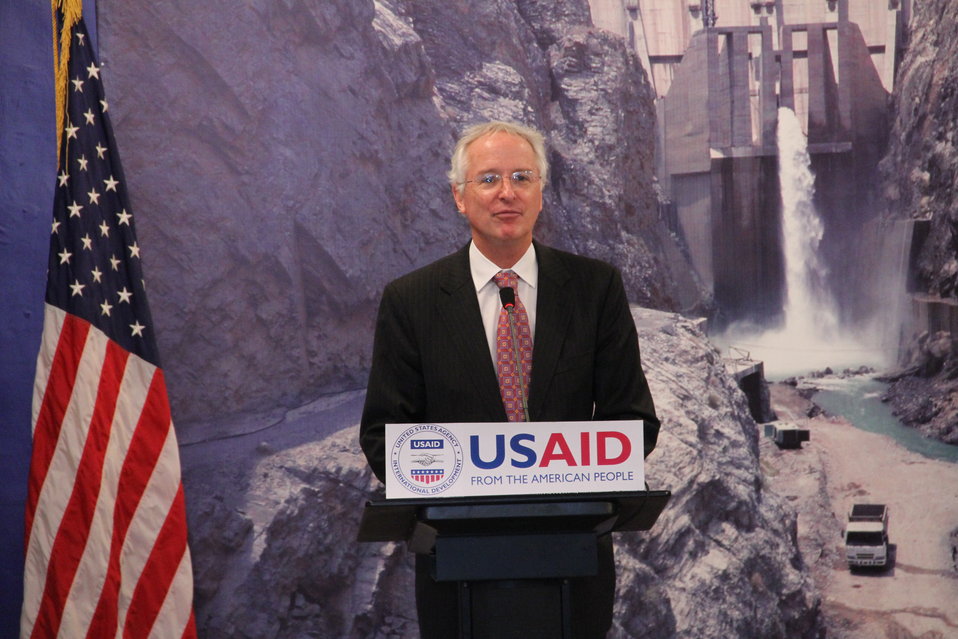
Photo Exhibition Celebrate US-PAK Cooperation at PNCA, Islamabad on April 13, 2012

Mr. Cameron Munter, Us Ambassador addressing the Media & Officials